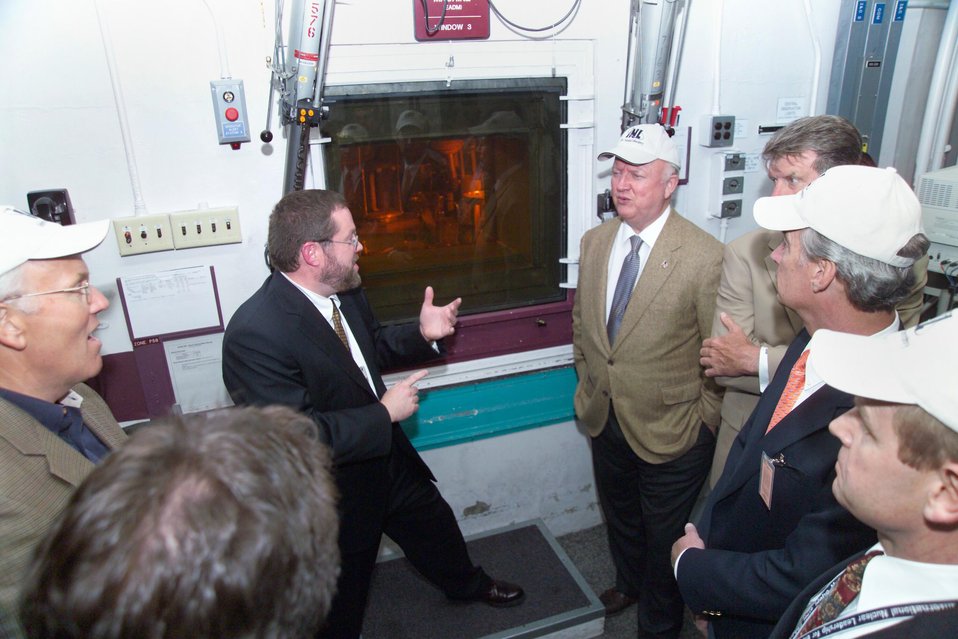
DURING A VISIT TO THE IDAHO NATIONAL LABORATORY IN JUNE 2005, SECRETARY BODMAN VISITS THE MATERIALS AND FUELS COMPLEX.

INL'S MATERIALS AND FUELS COMPLEX IS LOCATED 38 MILES WEST OF IDAHO FALLS ON THE HIGH DESERT SAGEBRUSH STEPPE OF THE SNAKE RIVER PLAIN IN SOUTHERN IDAHO. THE COMPLEX IS THE PRIME TESTING CENTER FOR ADVANCED TECHNOLOGIES ASSOCIATED WITH NUCLEAR POWER SYSTEMS. IT CONTRIBUTES INCREASINGLY EFFICIENT REACTOR FUELS AND THE IMPORTANT WORK OF NONPROLIFERATION HARNESSING MORE ENERGY WITH LESS RISK.